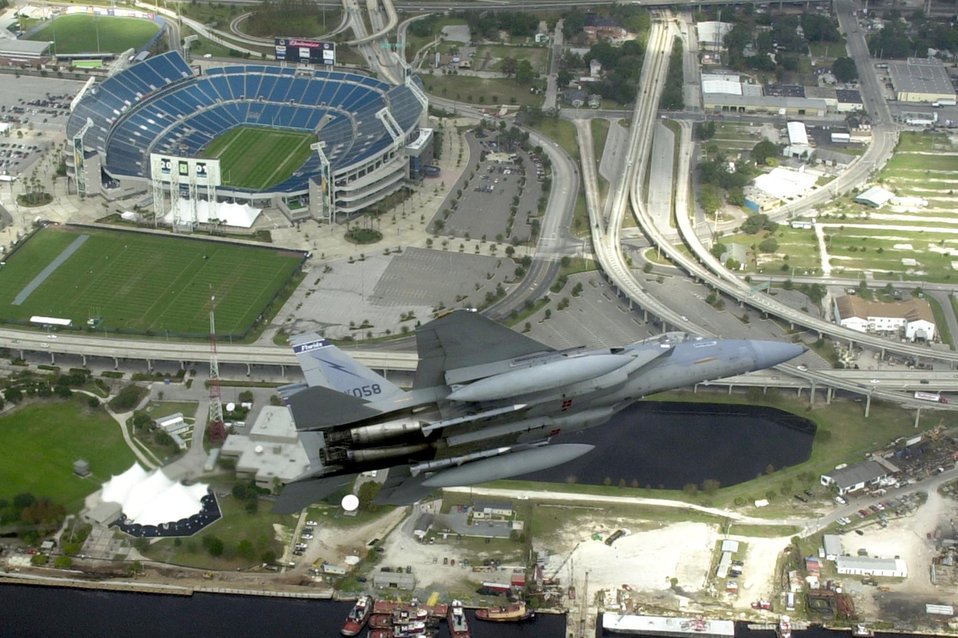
Air Force fighters prep for Super Bowl XLV

F-15 Eagles patrol areas around critical infrastructure and during special events. Fighter aircraft such as these conducted air patrols around Raymond James Stadium in Tampa, Fla., in support of Super Bowl XLIII.